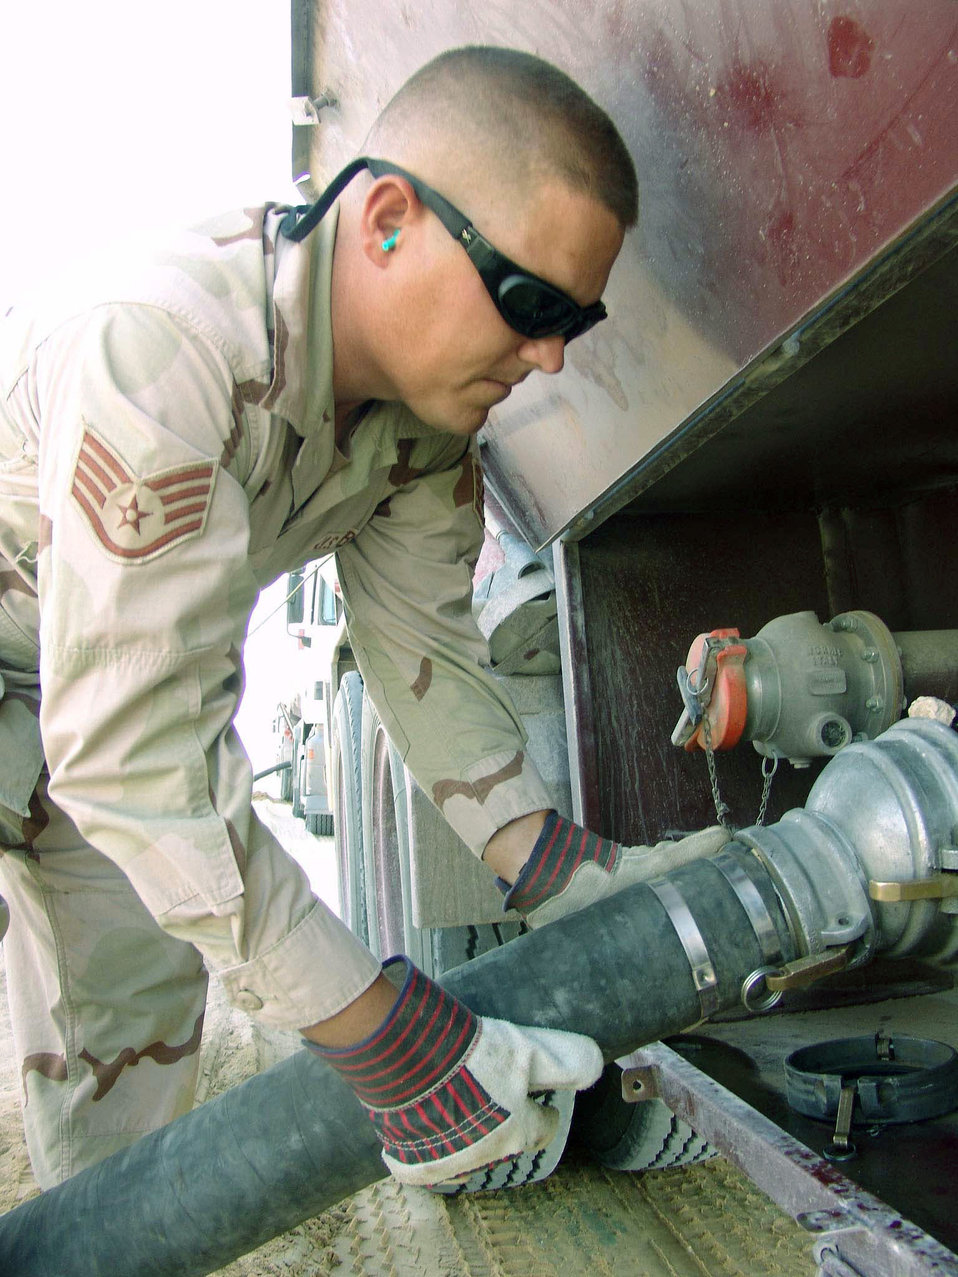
Bladder control

SOUTHWEST ASIA -- Staff Sgt. Ron Casey connects a pumping unit's receiving hose to a truck Oct. 14. The unit handles about 113,000 gallons of fuel daily. Sergeant Casey is a fuels bulk storage supervisor assigned to the 386th Expeditionary Logistics Readiness Squadron. He is deployed from Eglin Air Force Base, Fla.